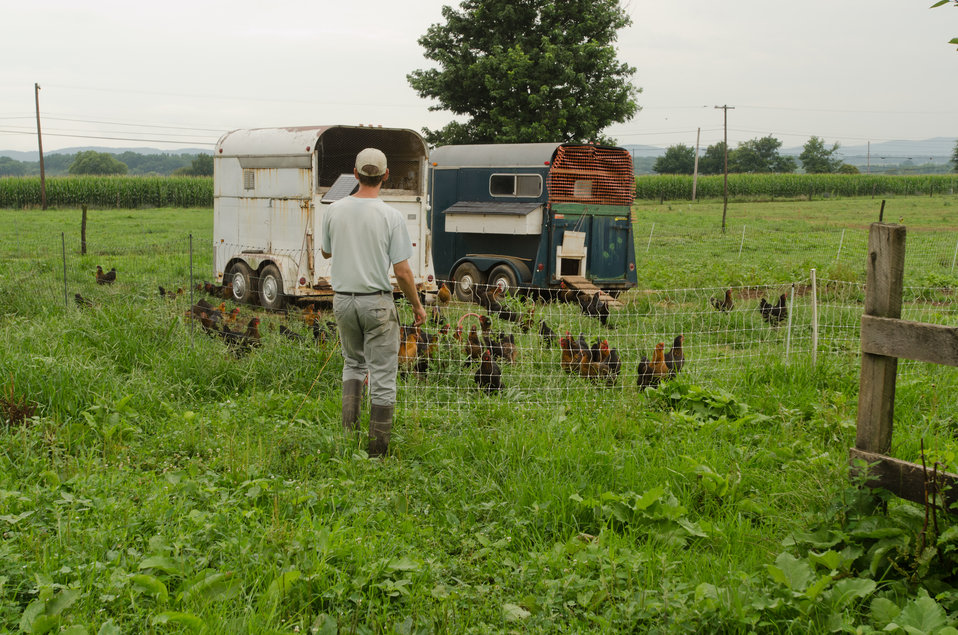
Farm assistant George Kloph turned the power off of the protective fence to check on the health and safety of laying hens at Nick’s Organic Farm, in Adamstown, MD, on Friday, July 12, 2013. The fence helps keep predators away from the chickens. Discarded horse trailers have been repurposed as coops with nests on the side that allow for easy egg harvesting. The farm, owned by Nick Maravell, produces Black Angus beef, chicken, turkey, eggs, hay, soybeans, corn, alfalfa, orchard grass, rye; and other crops. The cattle are100% grass-fed receiving certified organic pasture, certified organic hay (in winter), water and mineral salts mixed with sea kelp. The cattle are not fed hormones, antibiotics or animal products. Poultry feed from grain is ground from organic grain. The poultry also graze on organic pastures. The farm has conducted on-farm research with federal, state and non-profit agencies to refine organic practices. An organization such as the U.S. Department of Agriculture (USDA) Agricultural Research Service (ARS) center in Beltsville has been able to conduct research to improve organic crops and to breed and manage the cattle so that they have.